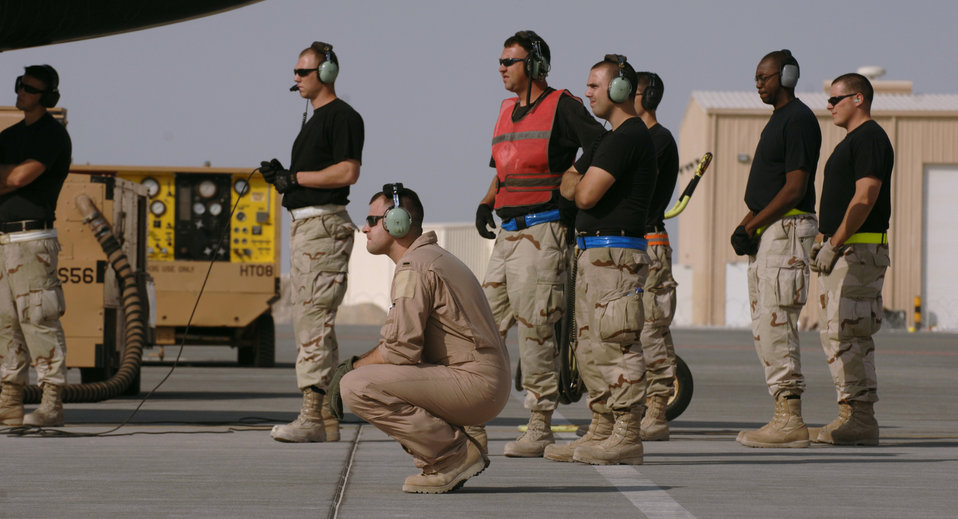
Maintainers turn Rivet Joint

First Lt. Drew Townsend and a group of crew chiefs from the 55th Aircraft Maintenance Unit verify movement of the reconnaissance plane's wing flaps in preparation for a mission over Southwest Asia. RC-135 Lieutenant Townsend is an RC-135 co-pilot, and the 55th AMU Airmen are from Offutt Air Force Base, Neb.